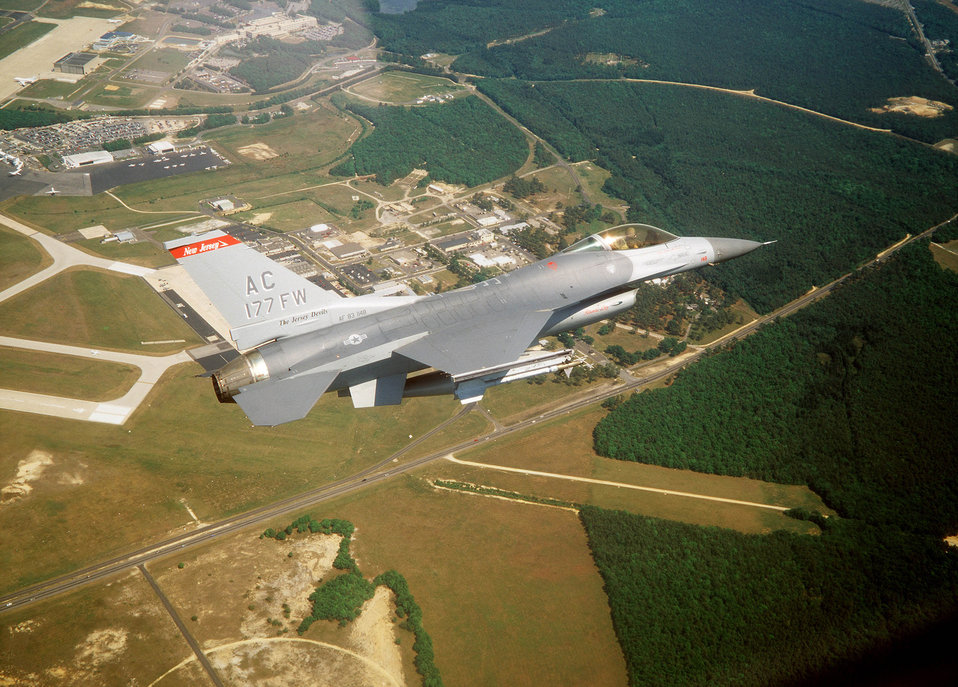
Lining up the runway

FILE PHOTO -- An F-16 Fighting Falcon prepares to land at the Atlantic City International Airport in New Jersey. The Atlantic City International Airport is home to the 177th Fighter Wing, New Jersey Air National Guard.